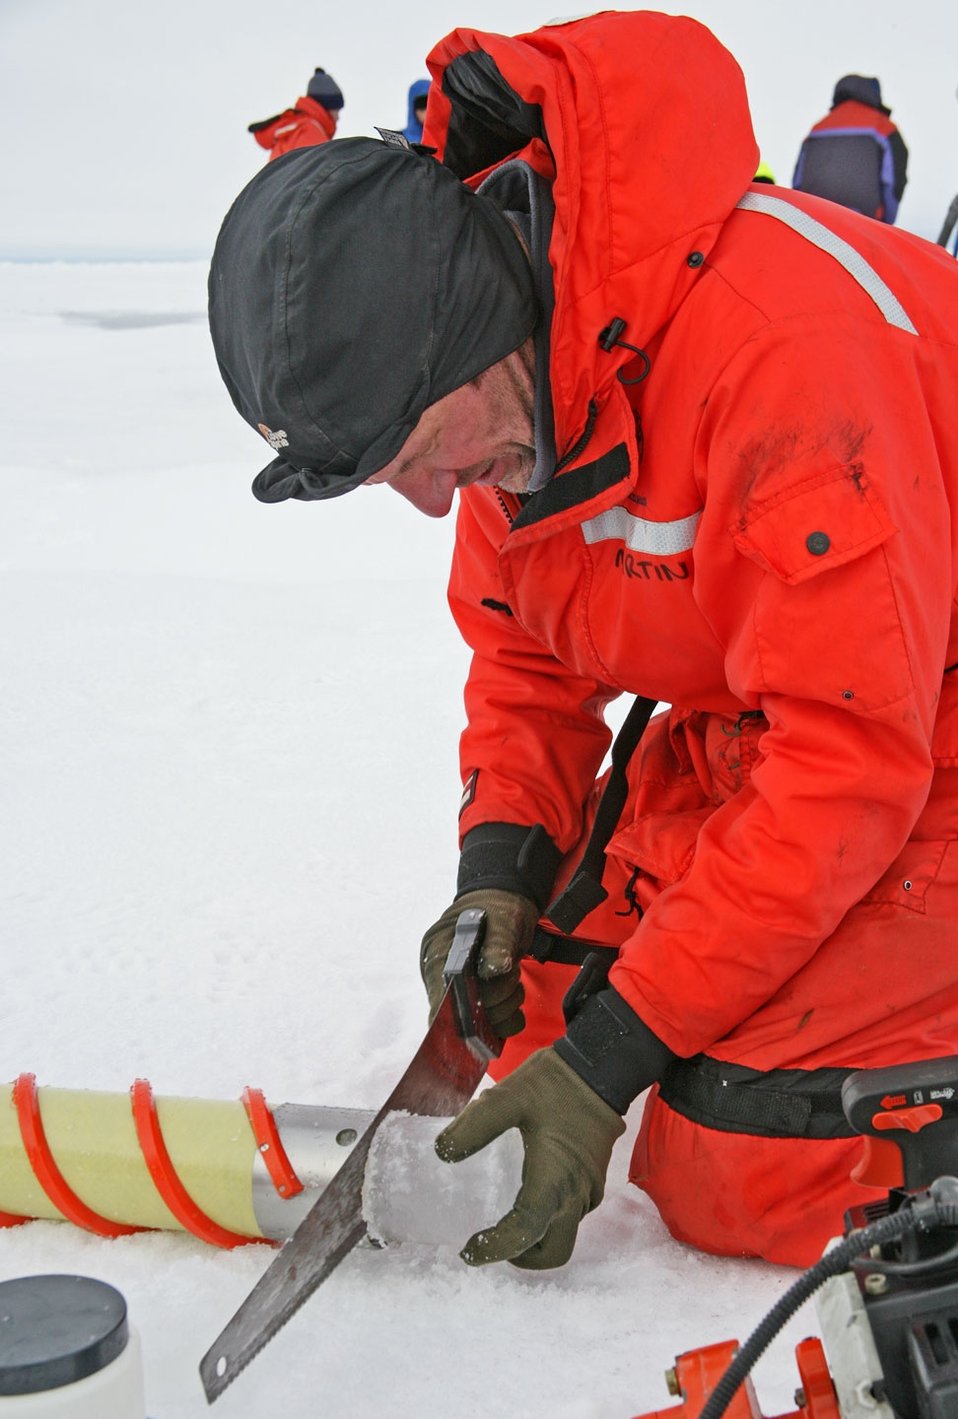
Sawing through ice core to obtain samples for analysis.